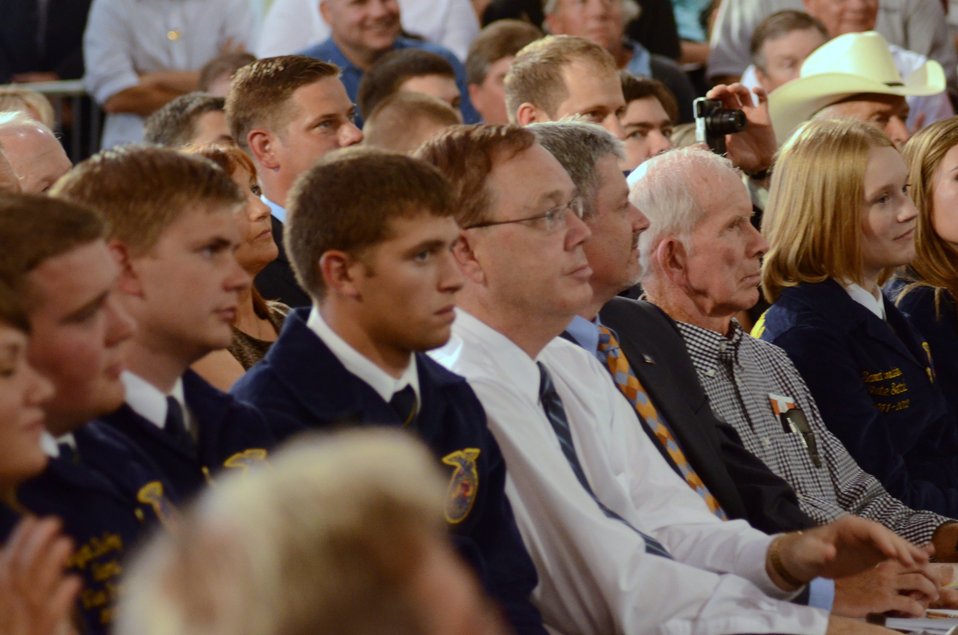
Agriculture Under Secretary for Rural Development Dallas Tonsanger (center white shirt) and members of the audience listen to President Barack Obama speaking at the Northeast Iowa Community College, for a White House Rural Economic Forum on Tuesday, Aug. 16, 2011. The President’s visit will focus on agriculture’s contribution to the national economy, and how to create more jobs in rural America.